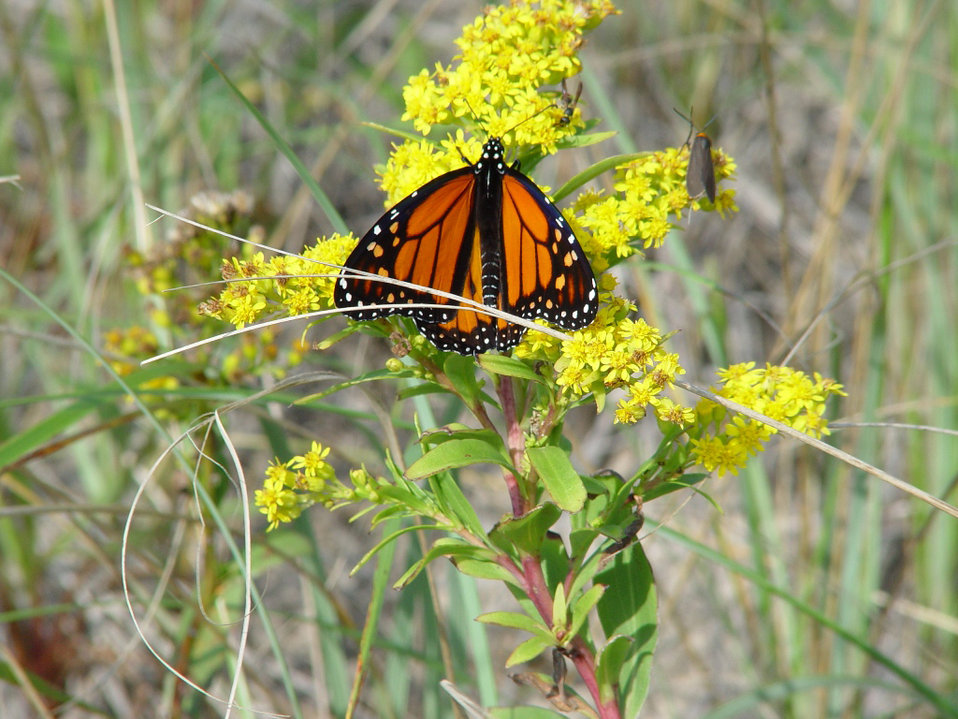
Photo of the Week - Monarch butterfly on goldenrod (RI)

Photo of the week - 10/11/2011

Monarch butterfly on goldenrod on beach in Rhode Island State Ninigret Conservation Area in Charlestown where invasive plant treatment took place.